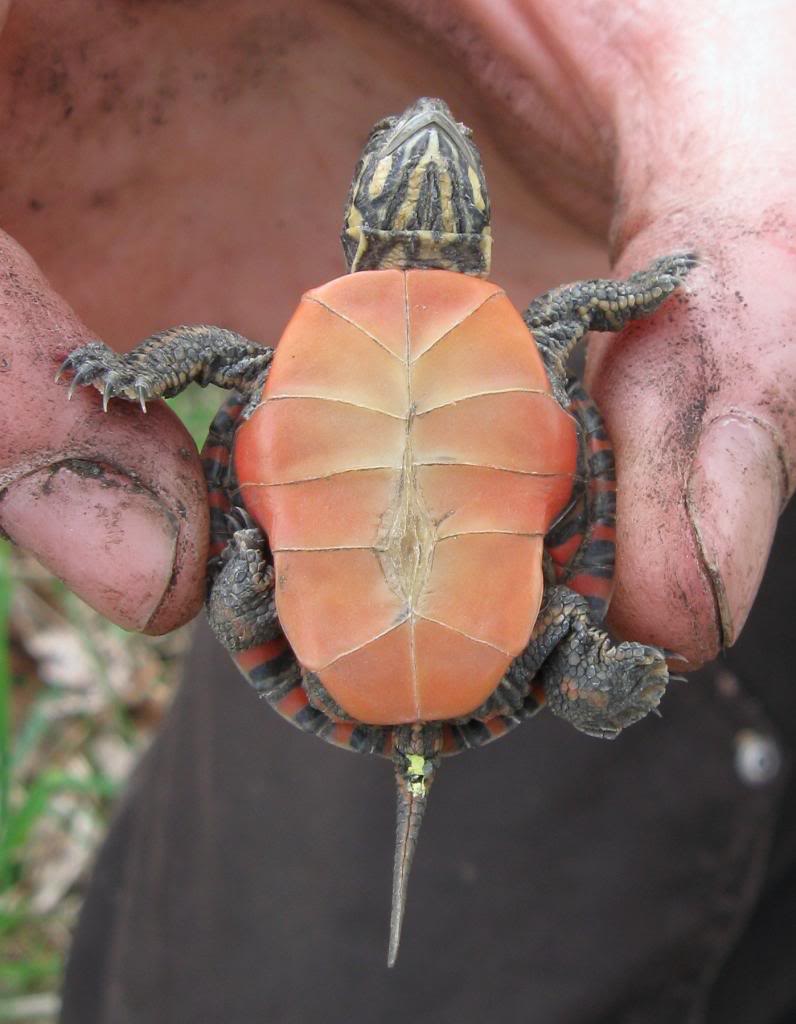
Baby painted turtle at Eastern Massachusetts National Wildlife Refuge Complex